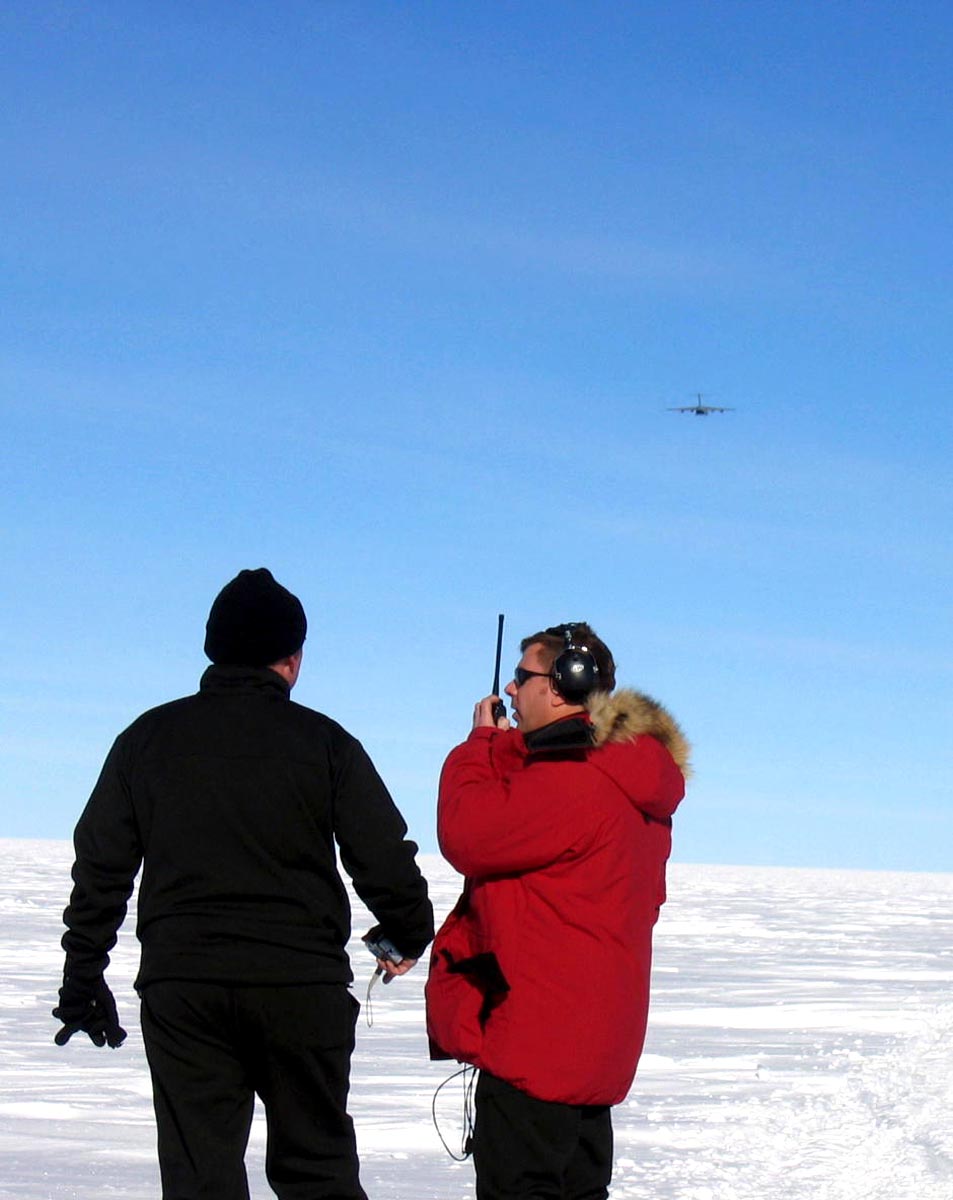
C-17 polar airdrop capability successful

A drop zone controller guides the C-17 Globemaster III aircrew members during the containerized delivery system airdrop of supplies Dec. 18 to the South Pole. By validating the C-17 capability to complete airdrop missions at the Geographical South Pole, Joint Task Force-Support Forces Antarctica demonstrated its ability to provide mid-winter emergency re-supply and flexible support to the National Science Foundation and U.S. Antarctica Program.